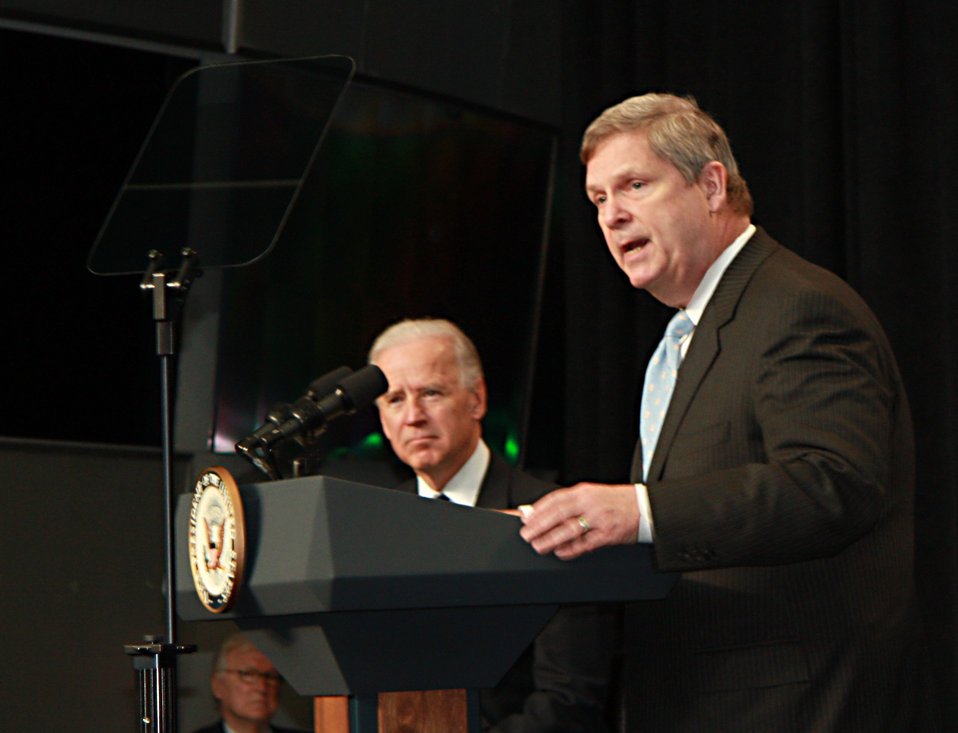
Agriculture Secretary Tom Vilsack and Vice President Joe Biden spoke to a large gathering of students and faculty about the important role manufacturing has in the future success of our country at An America Built to Last event at Iowa State University on Thursday, March 1, 2012 in Ames, IA.